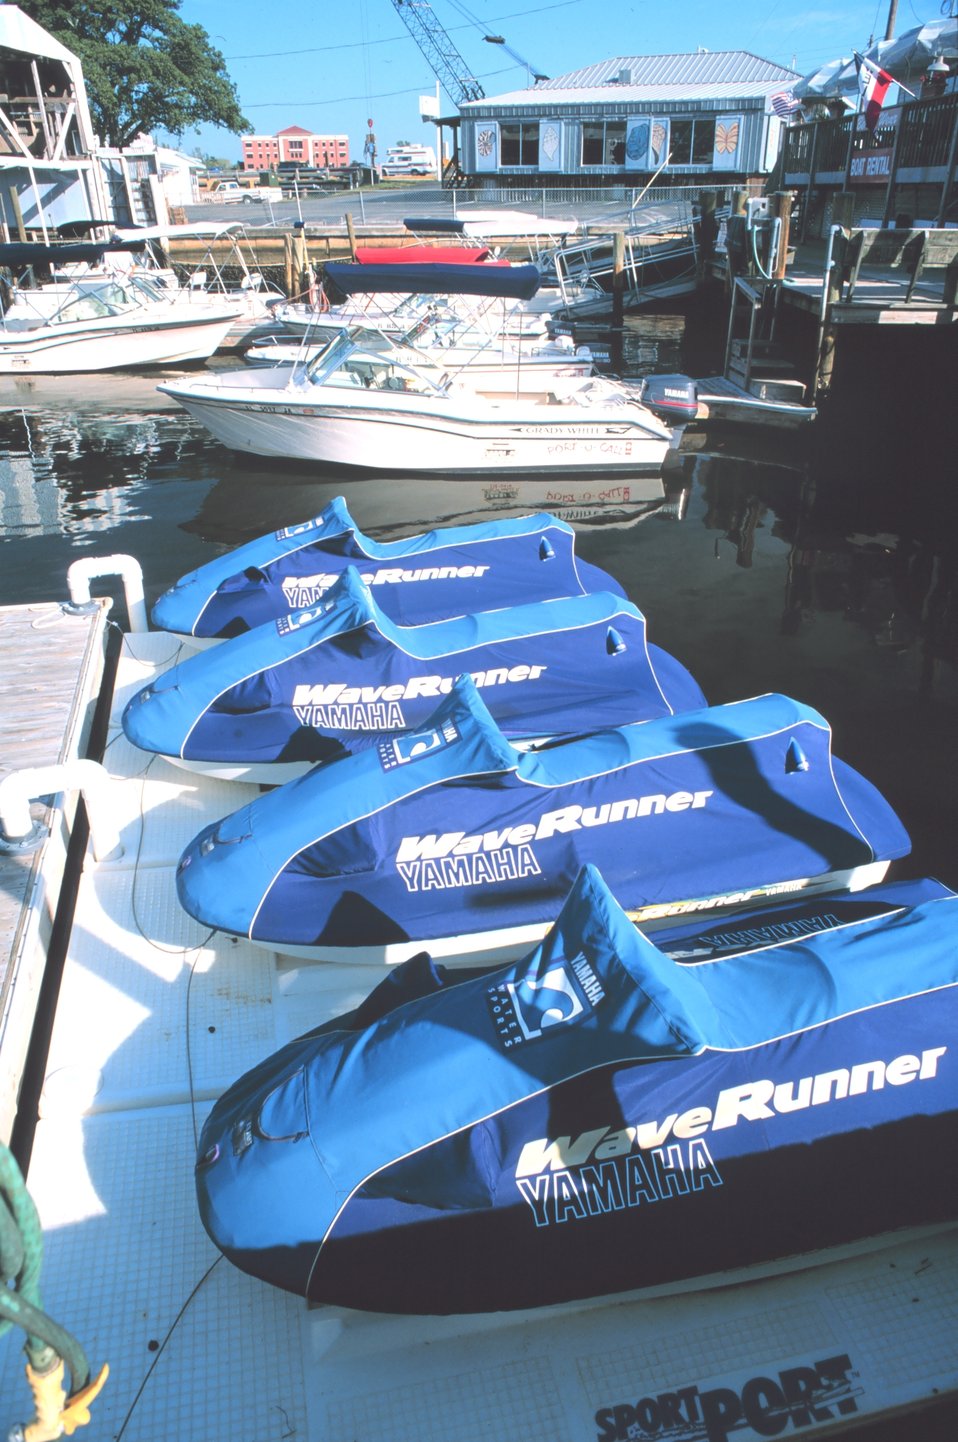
Jet ski boats at Port-O-Call Marina